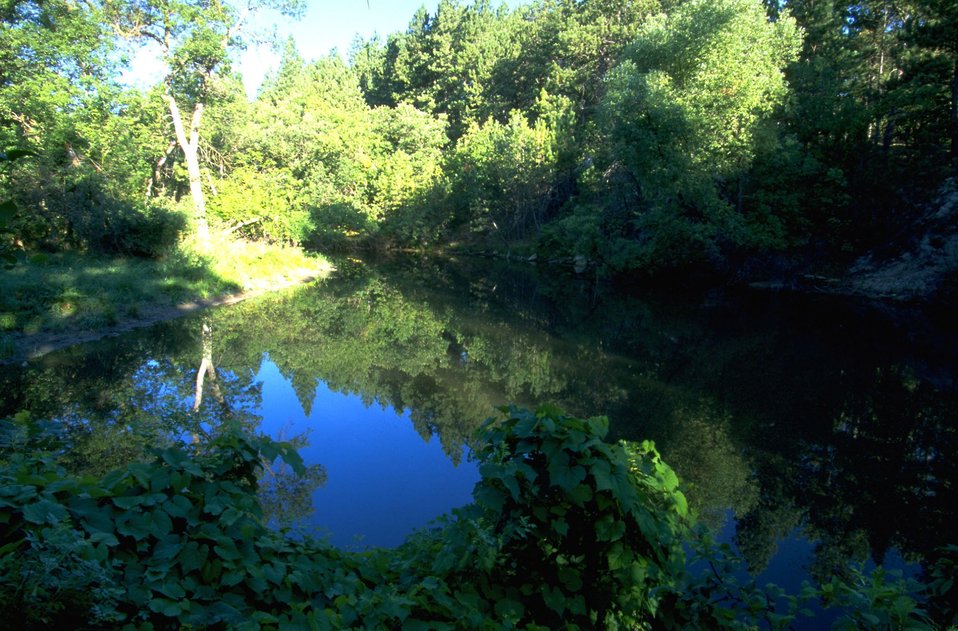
Frog Pond on Cattle Creek